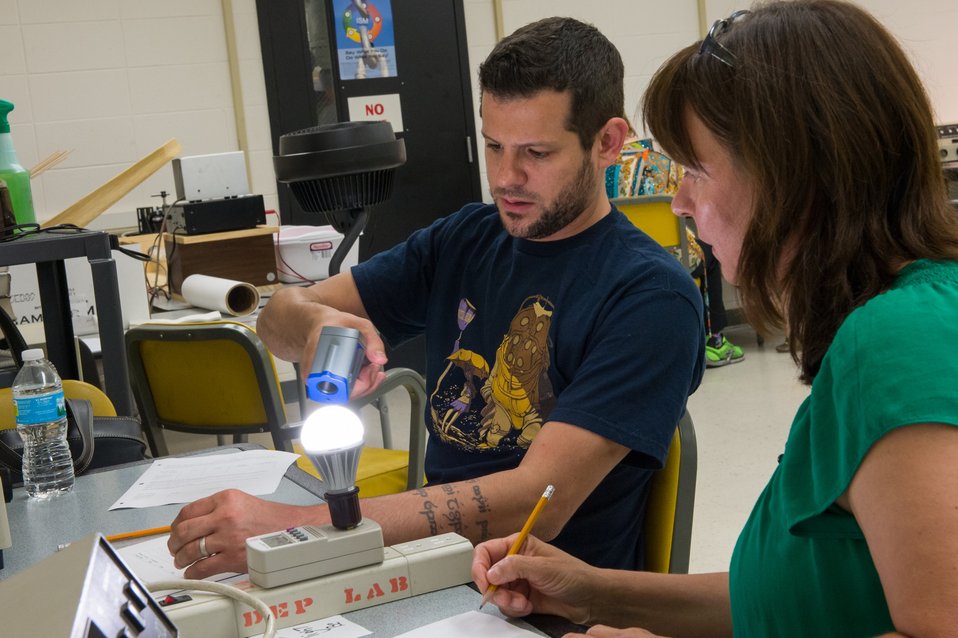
PARTICIPANTS IN THE 2013 ARGONNE SUSTAINABILITY TEACHERS WORKSHOP.

The workshop features hands-on activities including energy efficient laboratory work.